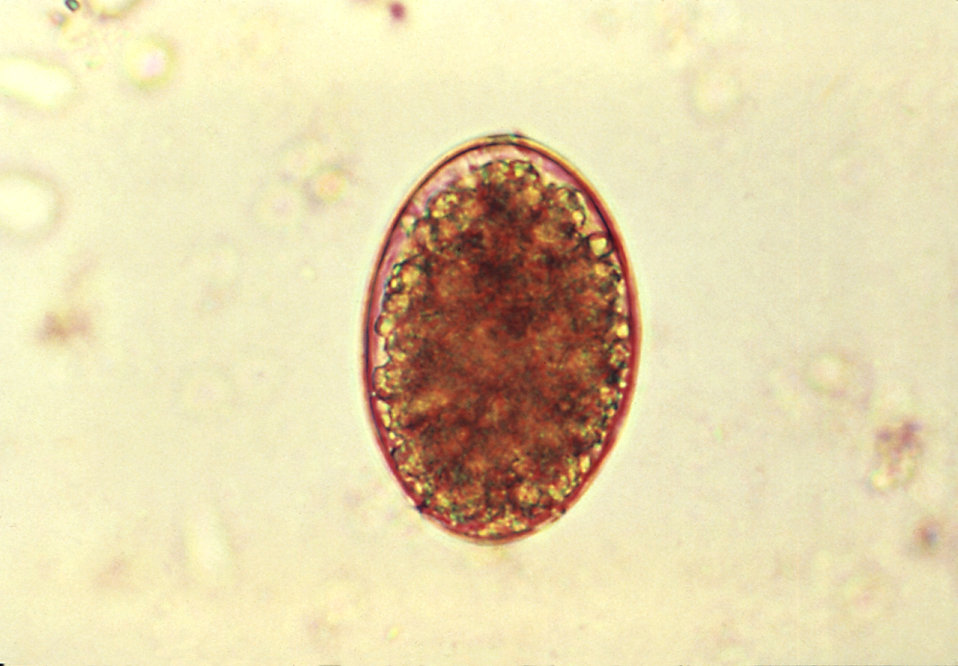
This micrograph reveals an egg of tapeworm cestode parasite Diphyllobothrium latum.